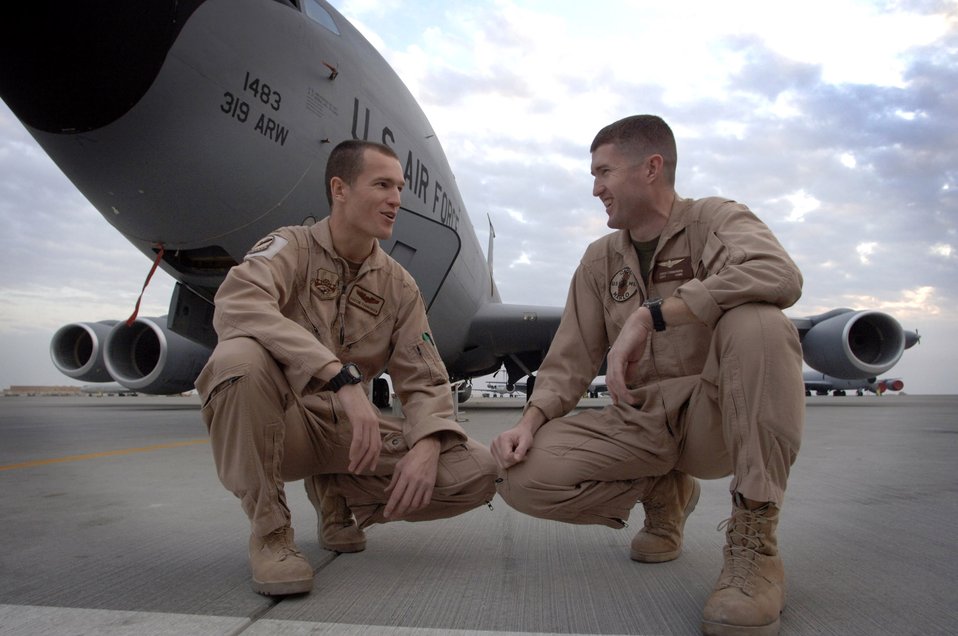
Sibling tanker pilots connect 7,700 miles from home

Marine Capt. Jason Torbensen visits the flightline where his younger brother, Air Force 1st Lt. Dustin Torbensen parks his KC-135 Stratotanker Nov. 28 in Southwest Asia. Captain Torbensen is deployed for one year in Southwest Asia as the 3rd Marine Airlift Wing's liaison officer to the CAOC, and Lieutenant Torbensen is soon to return from a two-month rotation to Southwest Asia. The brothers are from Kaysville, Utah.